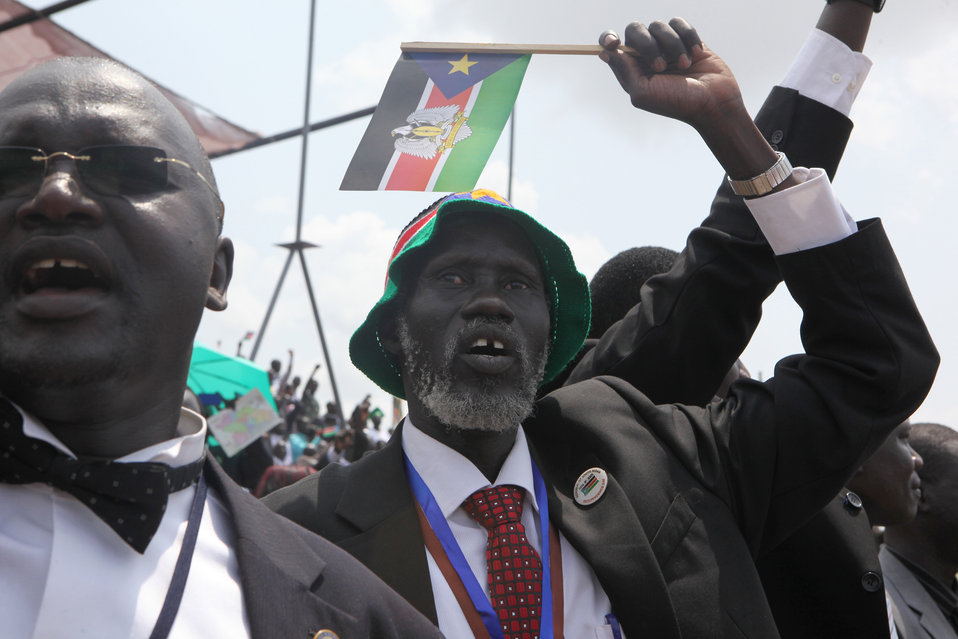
South Sudan Independence Day

Guests celebrate the Republic of South Sudan Independence Day in Juba, South Sudan on July 9, 2011.